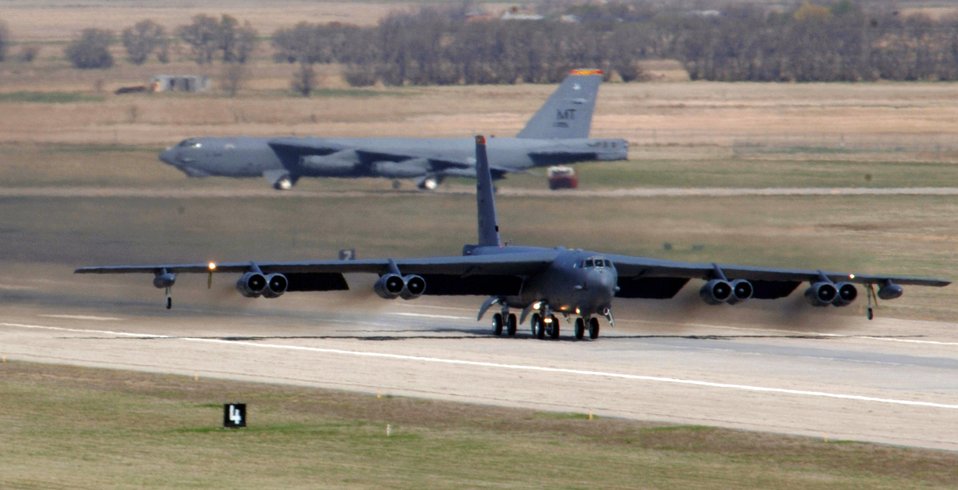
Rapid launch at Minot

A B-52 Stratofortress taxis for take-off at Minot Air Force Base, N.D., during a nine-ship rapid-launch generation exercise on Thursday, April 27, 2006. Generation exercises test the base's ability to perform its mission.